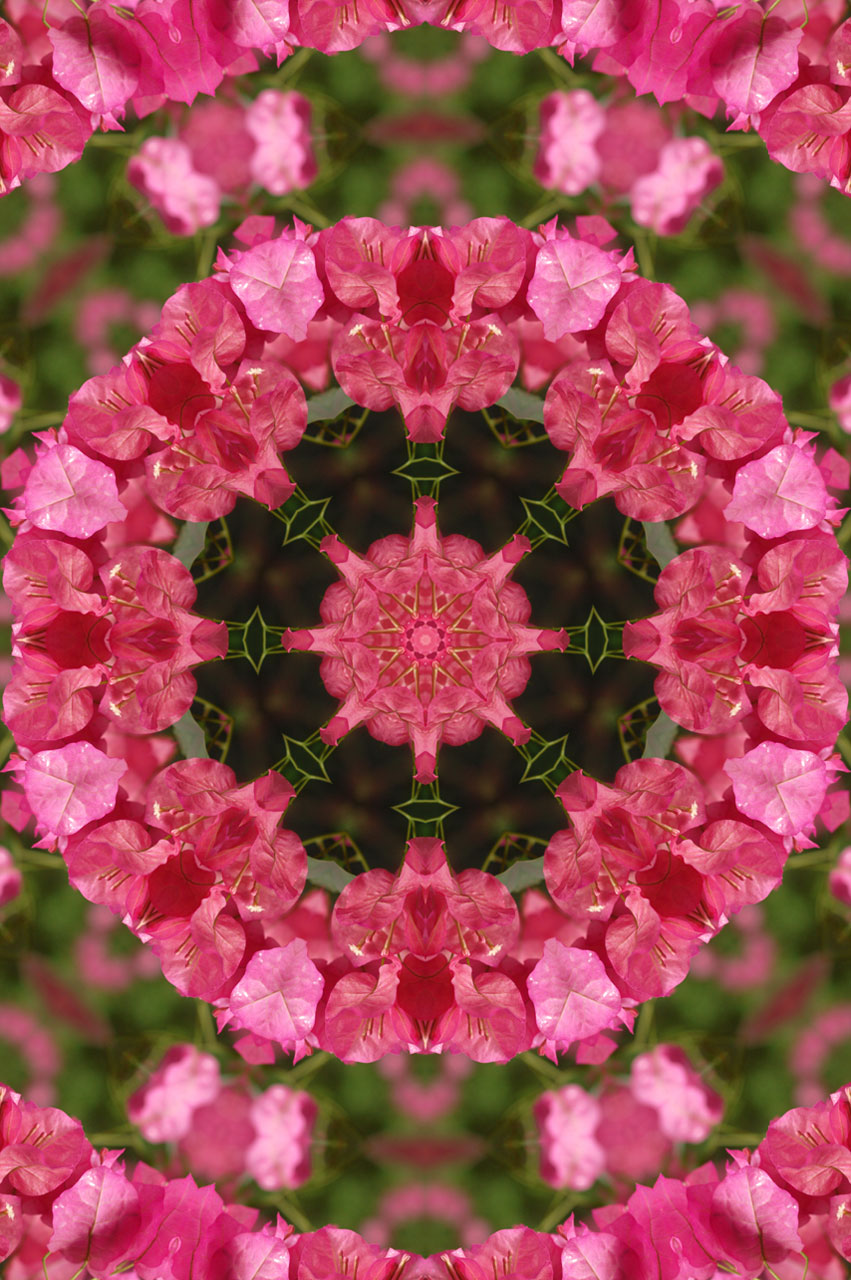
Floral mandala 2

Bright pink and green floral mandala.